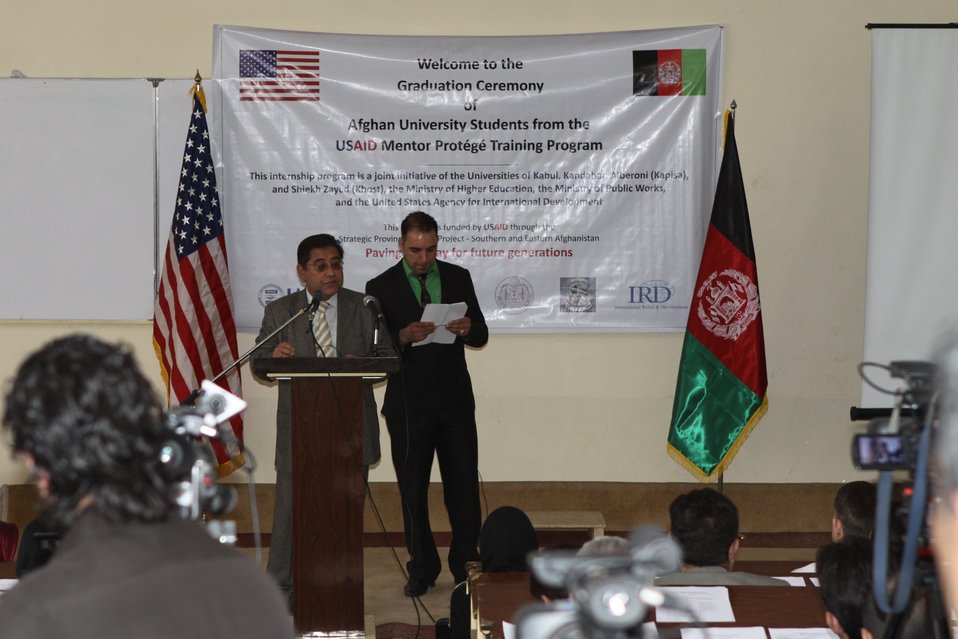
Female University Students Complete Internship

Kabul, Afghanistan | March 16, 2011 – In response to a demand for qualified Afghan engineers, Kabul University celebrated completion of an intensive five-month Mentor Protégé Training Program today by 10 female fourth year university students. The Training Program is a joint effort between the Government of the Islamic Republic of Afghanistan, the U.S. Agency for International Development (USAID), and the Universities of Kabul, Kandahar, Alberoony in Kapisa, Shiekh Zayed in Khost. The graduation ceremony highlighted collaboration with these national institutions in building the technical skills of young Afghans, made possible by USAID.

Four of the interns are engineers, while the remaining six are from the faculties of computer science, economics, and psychology.

Speaking about the event, H.E. Minister of Public Works Abdul Qudus Hamidi said, “The future of Afghanistan lies in developing the skills of our youth, and the engineering skills of these graduates today represent a small but important step forward for the country.”

Keynote speakers at the ceremony included H.E. Deputy Minister of Higher Education Abdul Rahim; USAID Senior Deputy Mission Director Robert Hellyer; and Chancellor of Kabul University Professor Hamidullah Amin. Approximately 150 people, including current and former students attended the graduation.

Launched last year, the Mentor Protégé Training Program has provided qualifying students the opportunity to intern with USAID’s Strategic Provincial Roads-South and East Afghanistan project and gain practical experience in a real work environment. The goal of the program was to offer interns the opportunity to gain hands-on experience to reinforce their formal studies. A total of 30 students from four national universities have benefitted from this program.

“The promotion of women’s rights is integrated into the overall U.S. Government development strategy and can be found in key programs, including education, healthcare, security, rule of law, political participation, agriculture, and economic development,” said Robert Hellyer. “The U.S. Government is committed to the Afghan leadership of programs that directly enhance development, particularly as it relates to women’s issues.”

This event also highlighted the learning achievements of students and emphasized the importance of hands-on internship programs. The curriculum is designed to instill students with the knowledge and confidence to qualify for engineering positions upon completion of their fourth year at their respective universities.